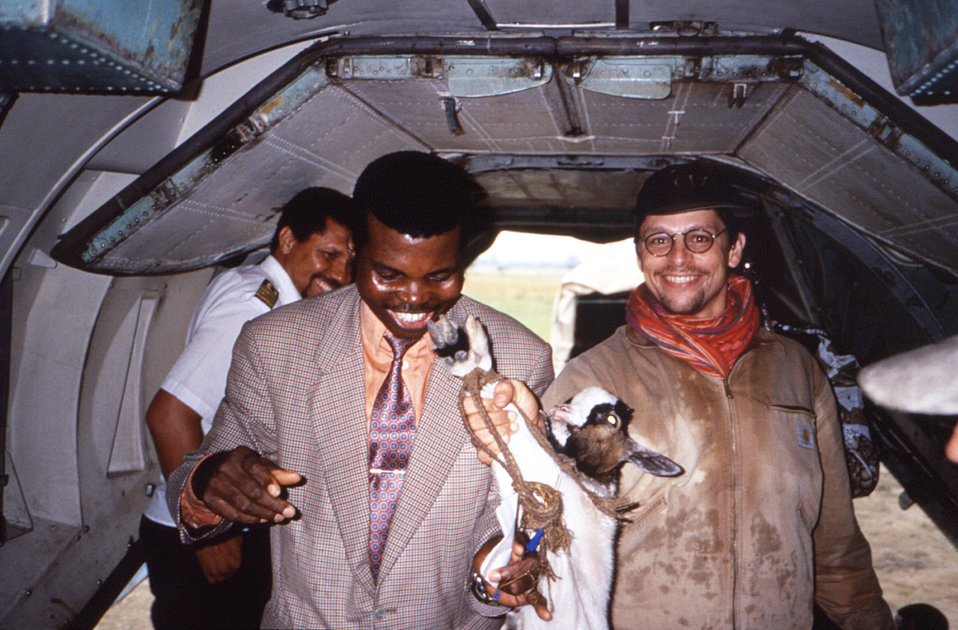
This image was created during an investigation into an outbreak of monkeypox, which took place in the Democratic Republic of the Congo (DRC), 1996 to 1997, formerly Zaire. In this particular view, epidemiologist E.I.S. Officer, Yvan Hutin, M.D., and World Health Organization (WHO) Dr. Florimont K. Tshioko, were in the process of boarding the aircraft with Dr. Tshioko's goat.